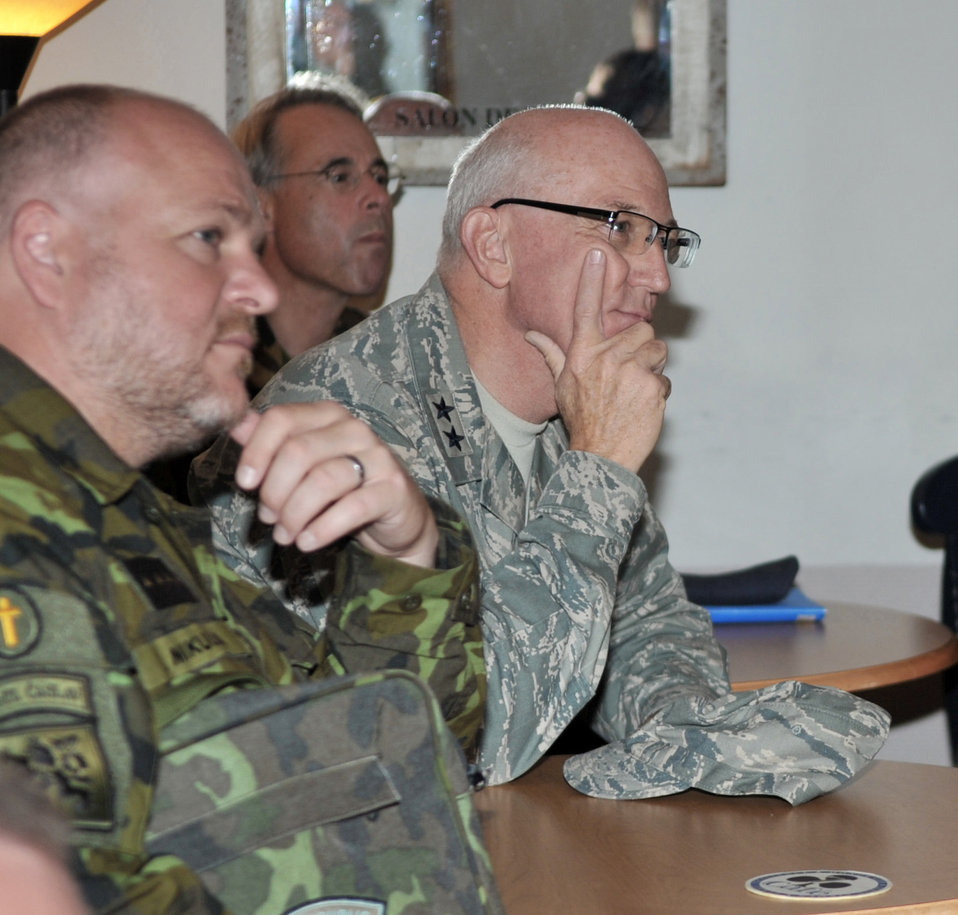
NATO AAFCCC 2011

Chaplain (Maj. Gen.) Cecil R. Richardson and other NATO chaplains listen to a briefing June 16, 2011, during the NATO Allied Air Force Chaplains Consultative Committee Conference at Ramstein Air Base, Germany. Chaplain Richardson is the U.S. Air Force chief of chaplains.